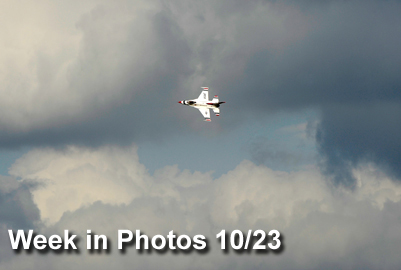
Week in Photos

Air Force Week in Photos for Oct. 23 highlights photos from around the Air Force. In this photo by Staff Sgt. Brian Ferguson, an Air Force Thunderbird F-16 flies over Osan Air Base, South Korea, Oct. 19, 2009, in preparation for the base Airpower Day air show.